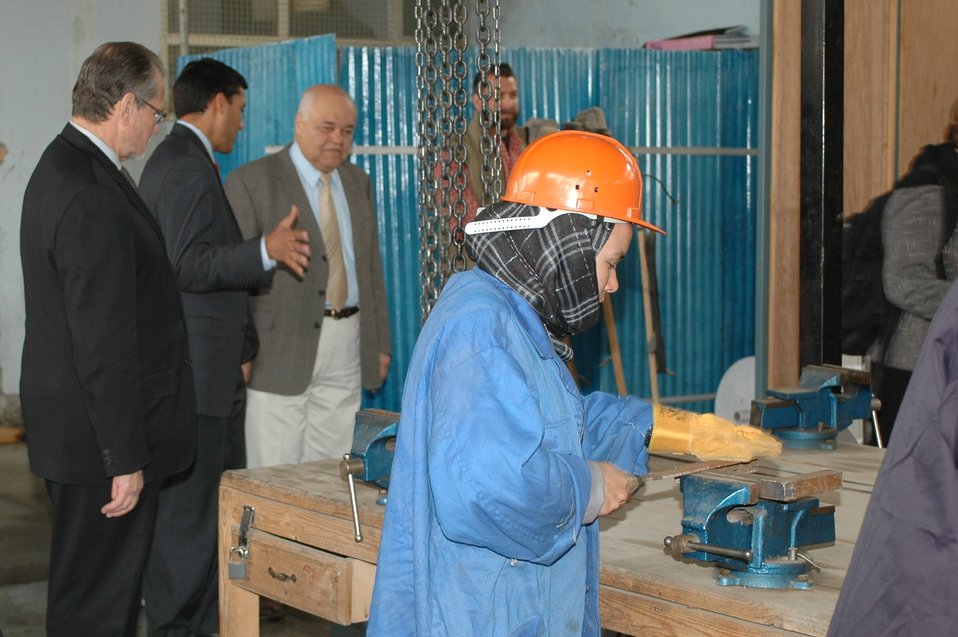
Dr Shah Visits Votech in Kabul